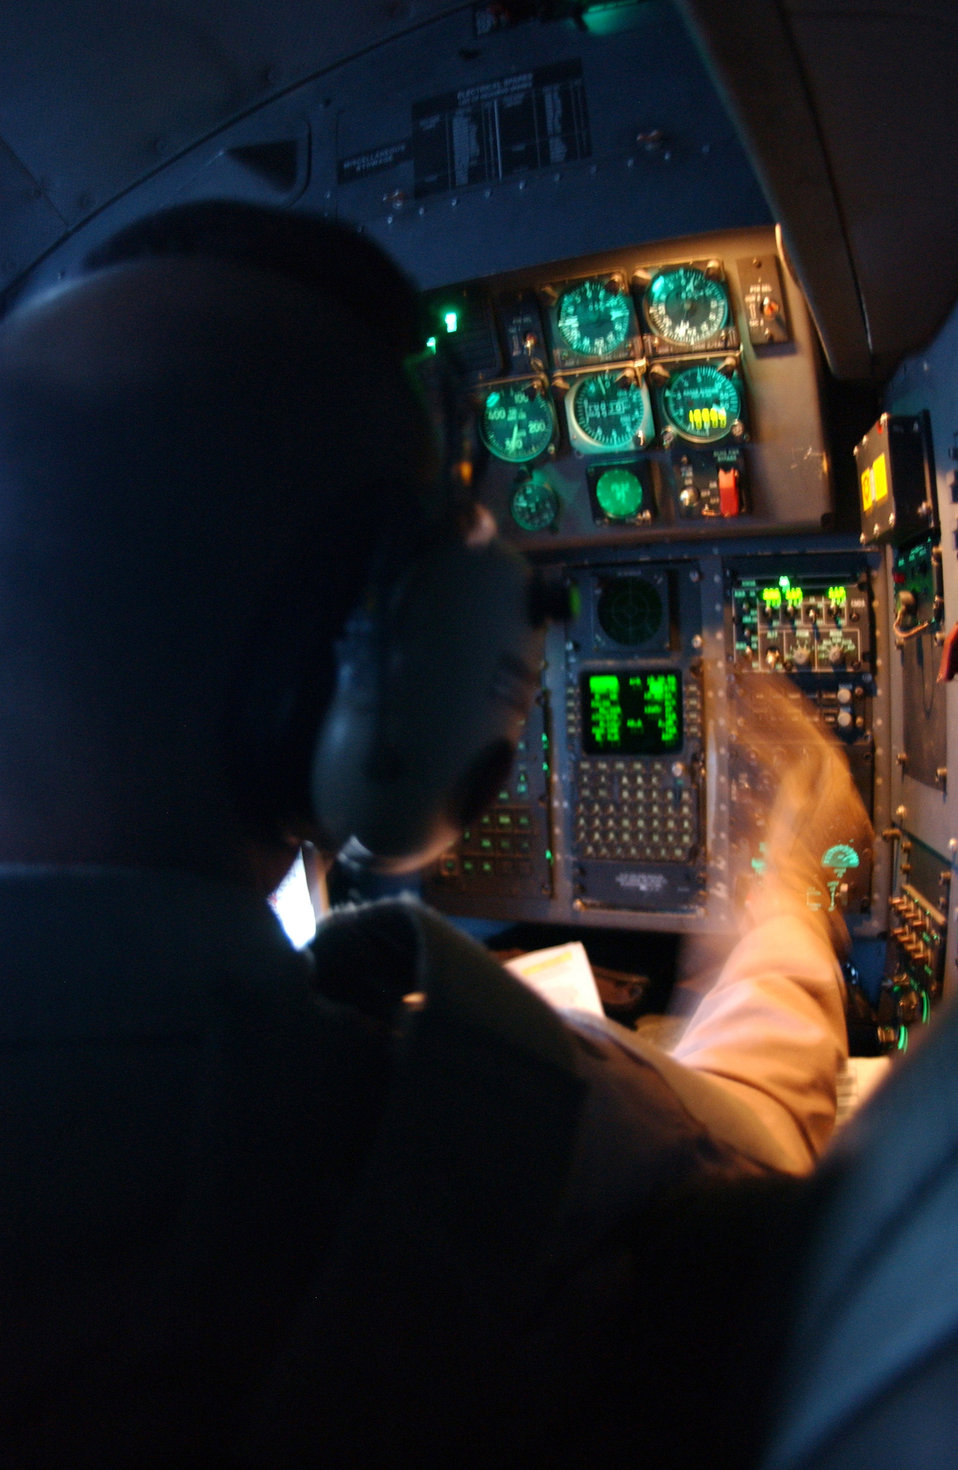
C-130s keep convoys out of Sunni Triangle

Navigator 1st Lt. Trent Smith adjusts coordinates during a flight out of Balad Air Base, Iraq. The average C-130 Hercules sortie keeps three trucks' worth of cargo off the road. That means in one average day, the transport?s six-Airman crew keeps 27 trucks -- and all of their support vehicles, drivers and security troops -- off Iraq?s roads. The lieutenant is with the 777th Expeditionary Airlift Squadron.